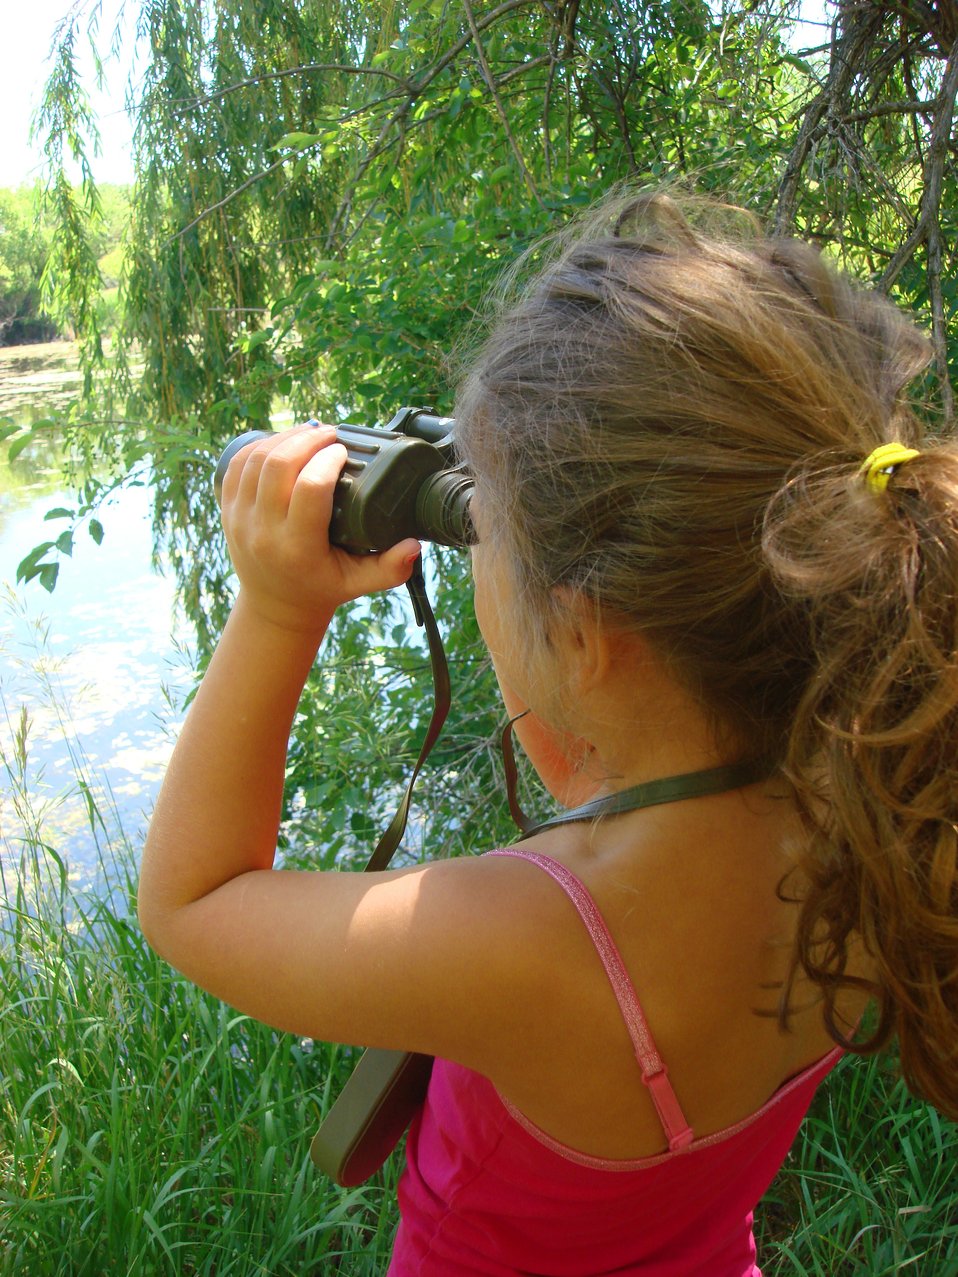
EE Girl